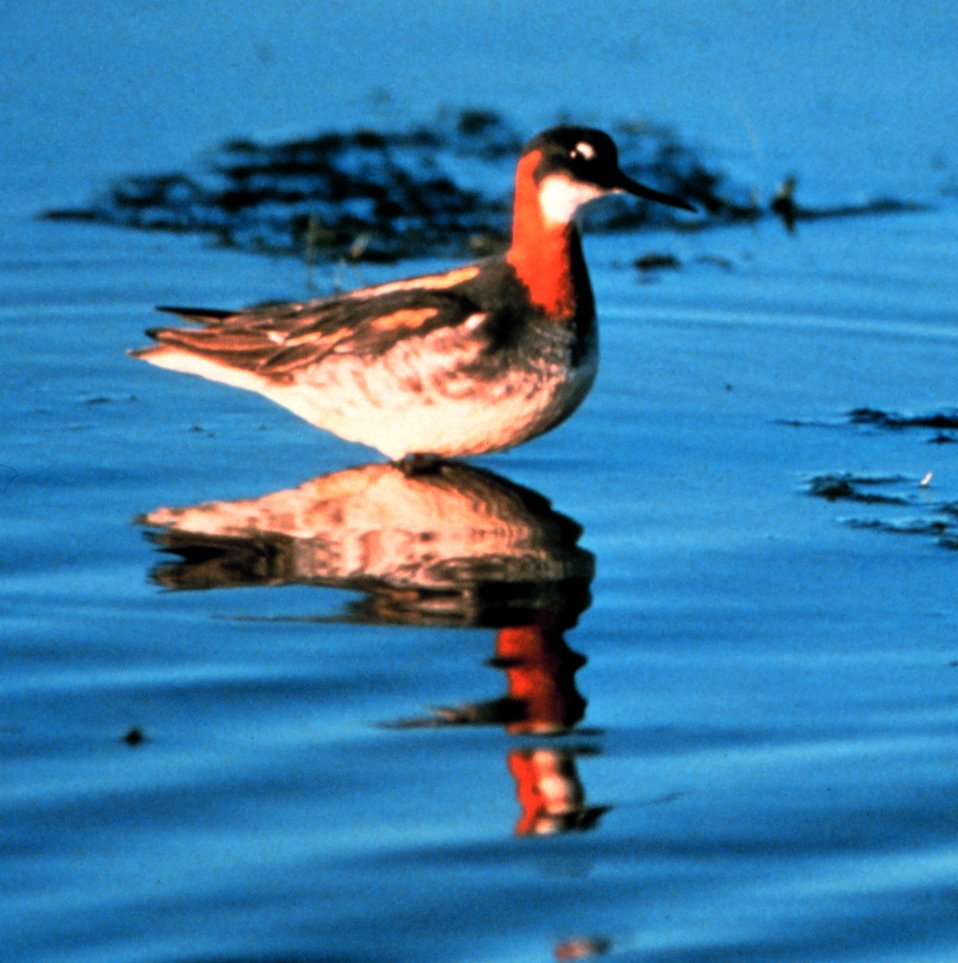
Kachemak Bay National Estuarine Research Reserve. A red-necked phalarope ( Phalaropus lobatus) wades in shallow waters near shore. Pelagic in habit, this shorebird spends most of its time at sea. Phalaropes employ the unique feeding strategy of spinning-in-place on the water surface, creating a whirlpool beneath themselves that pulls up bottom-dwelling larvae for them to feed on.